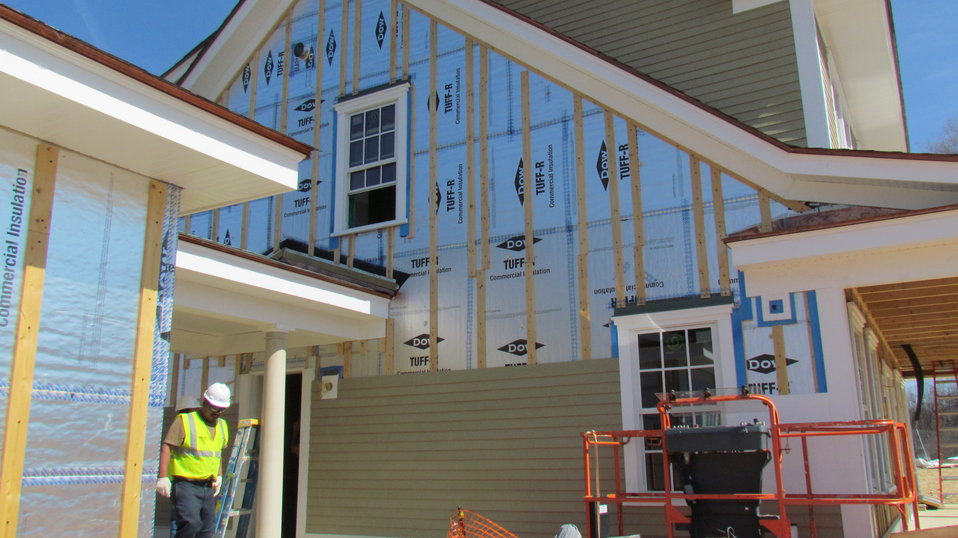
Cement fiberboard being installed on the west side of the facility.